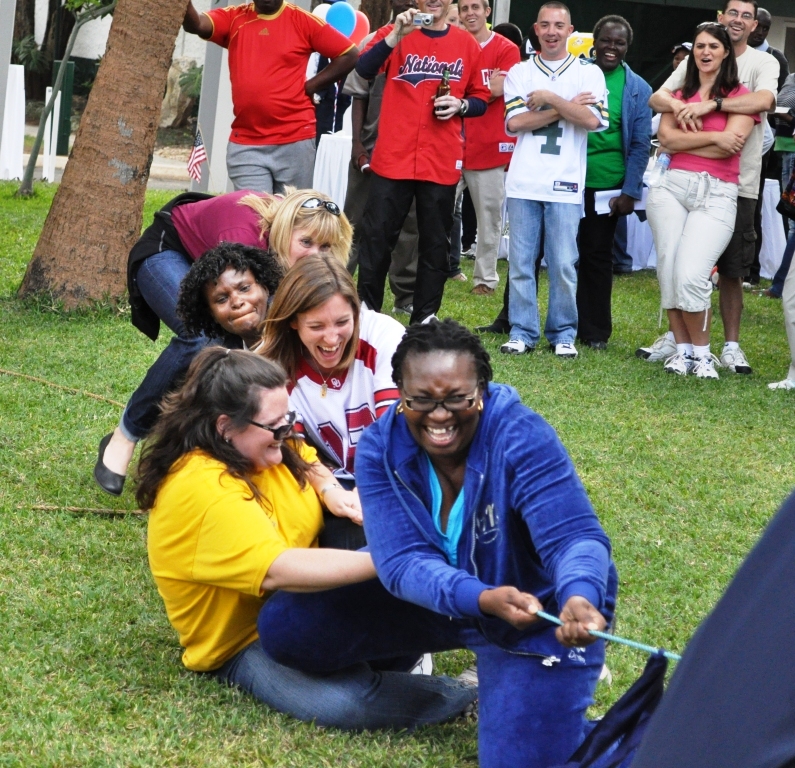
Americans and Zambians compete in a tug of war contest at the U.S. National Day commemoration on June 12, 2010, at the Ambassador's residence in Lusaka, Zambia.